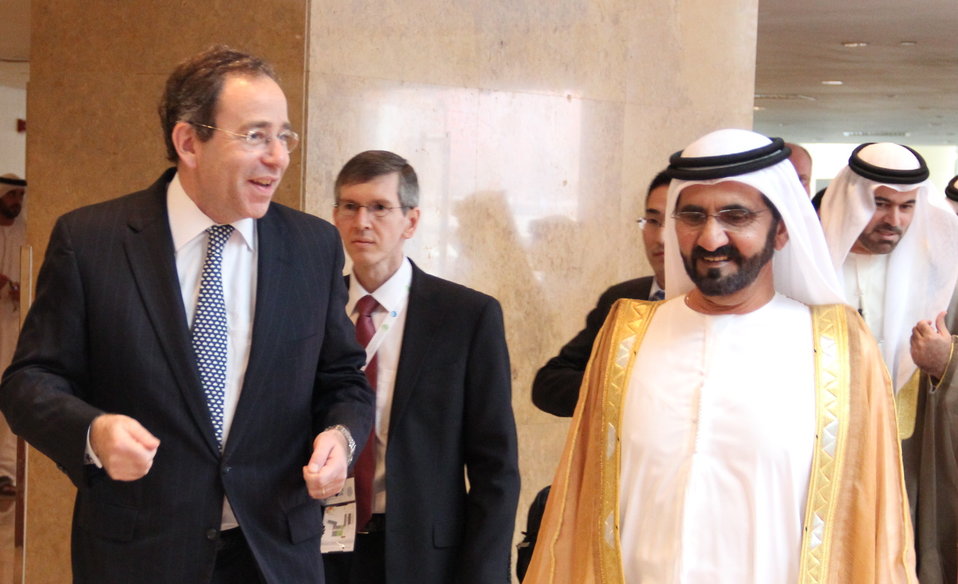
Deputy Secretary Nides Walks With the Ruler of Dubai

Deputy Secretary of State Thomas Nides and U.S. Consul General to Dubai Rob Waller meet with the Ruler of Dubai, Sheikh Mohammed bin Rashid Al Maktoum, during the Global Entrepreneurship Summit (GES) in Dubai, United Arab Emirates, December 12, 2012.